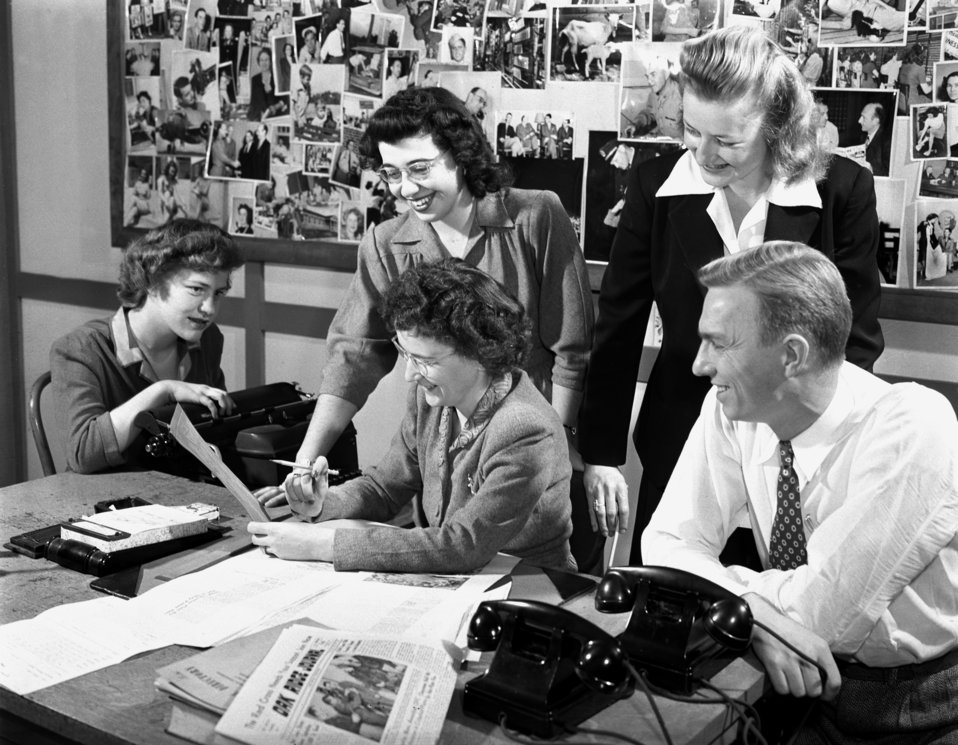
Oak Ridge Journal Staff 1947

3320-2a DOE photo Ed Westcott 2-28-1947 Oak Ridge Tennessee